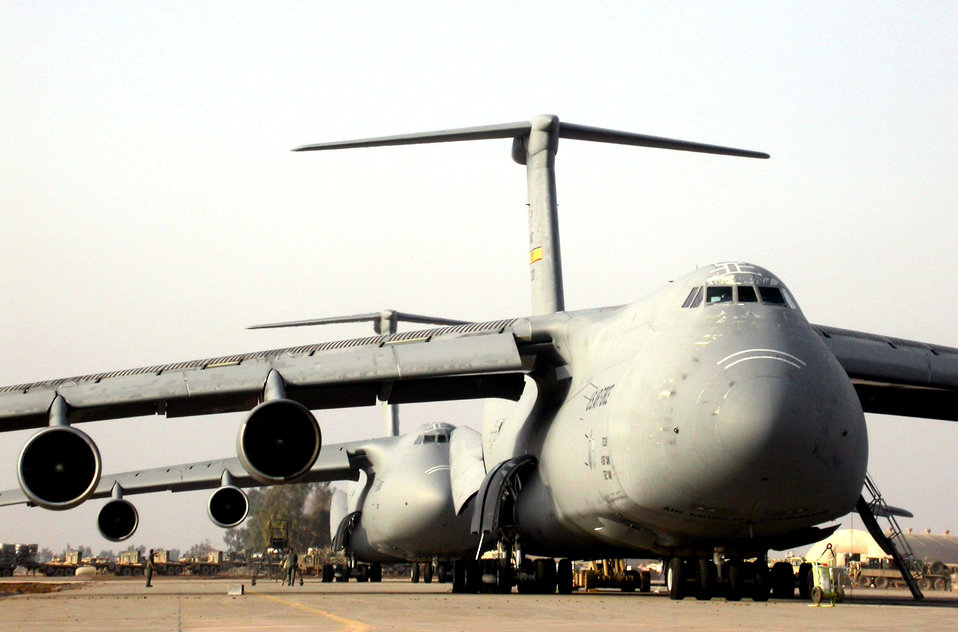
Crowding the runway

BALAD AIR BASE, Iraq -- Two C-5 Galaxy aircraft from Dover Air Force Base, Del., crowd the limited parking space on the flightline here.